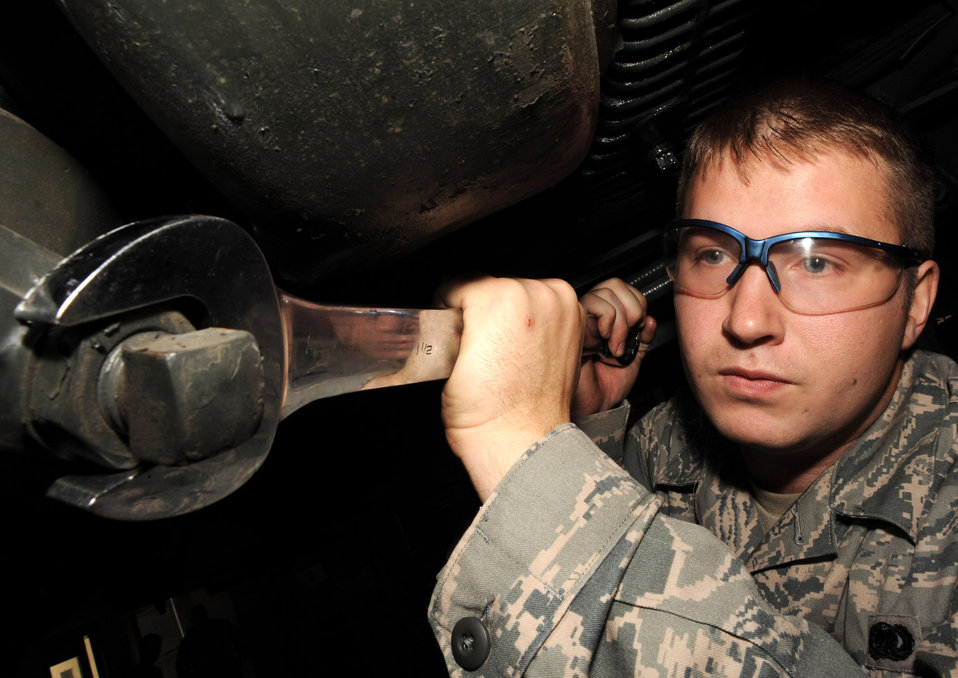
Senior Airman Ricky Lose loosens the bolt to the Y strainer with a wrench during a six-month scheduled service inspection Oct. 21, 2009, at Little Rock Air Force Base, Ark. The fuels flight is dedicated to developing and implementing fuels that are better for the environment, based on renewable resources to reduce dependence on foreign oil and save money. Airman Lose is a 19th Logistics Readiness Squadron refueling maintenance journeyman.